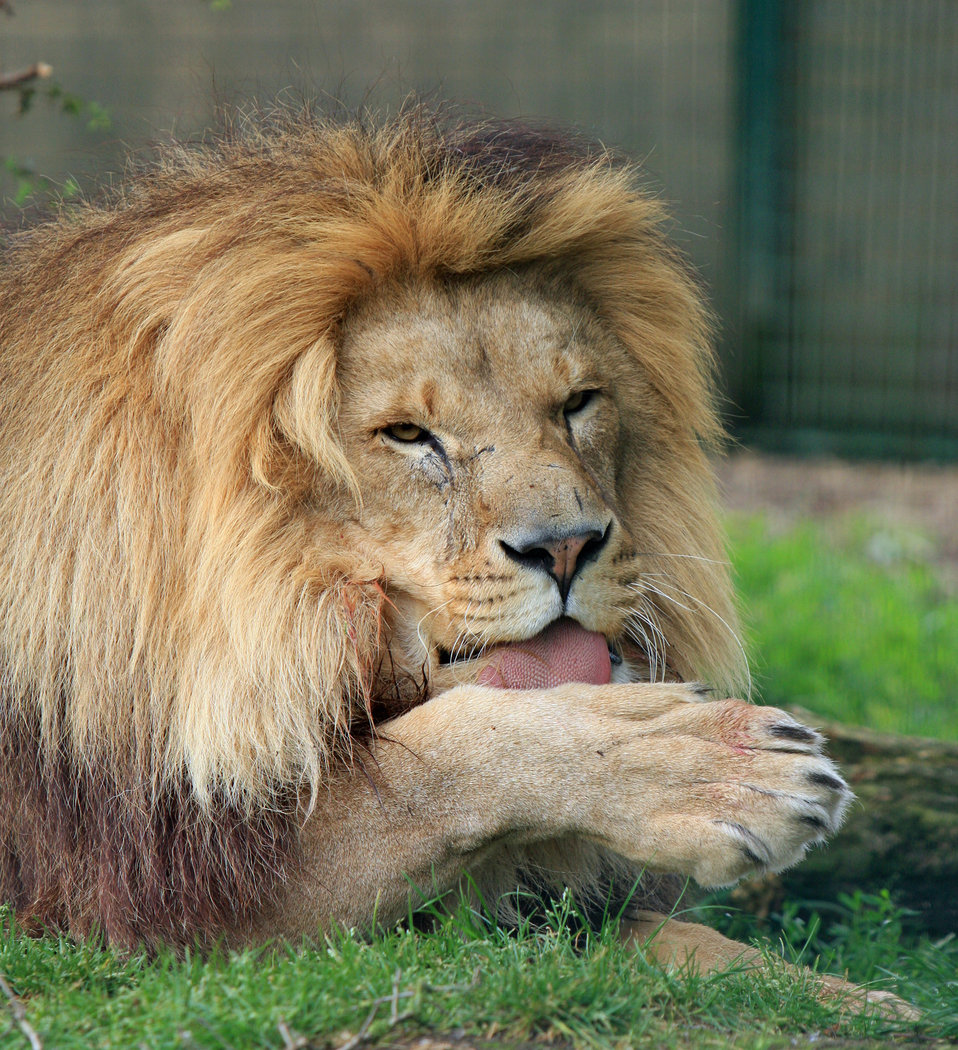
Lion licking paw

Male lion close-up licking paw.